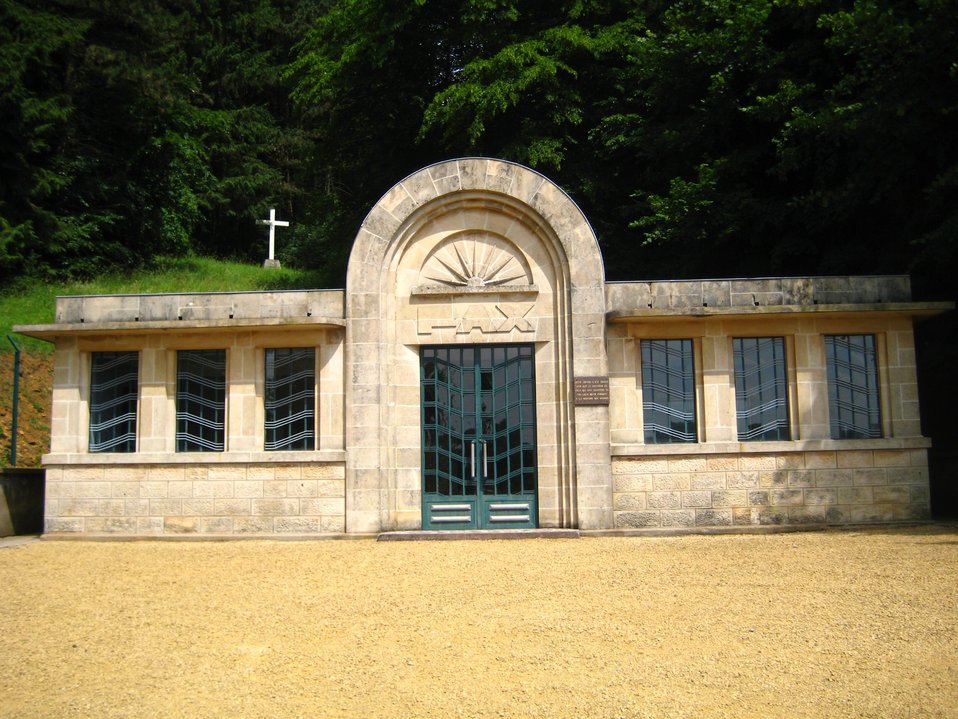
Camp de Thil